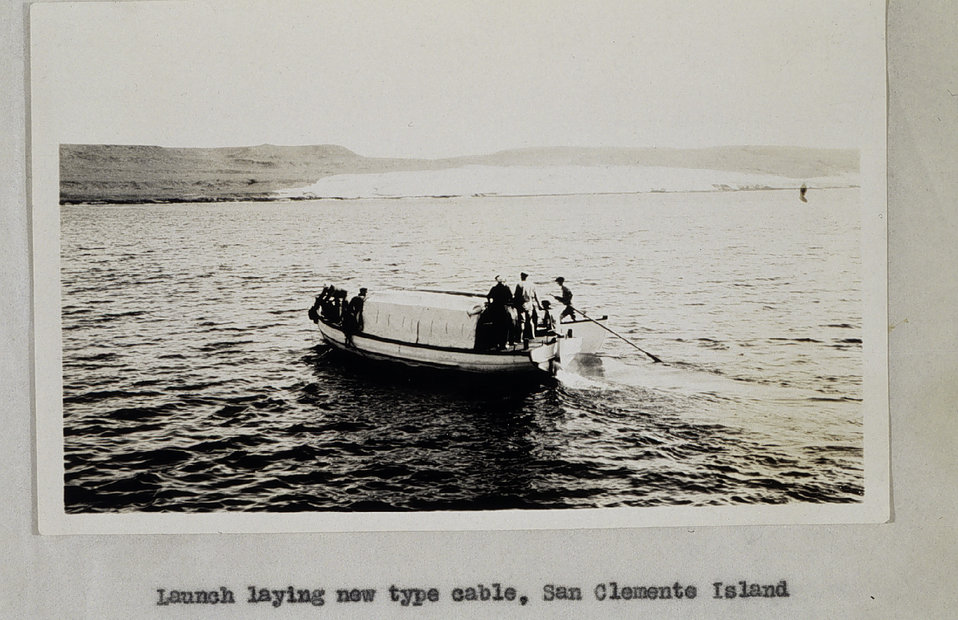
Launch laying the cable from hydrophone to the shore station. Radio acoustic ranging operations on the GUIDE